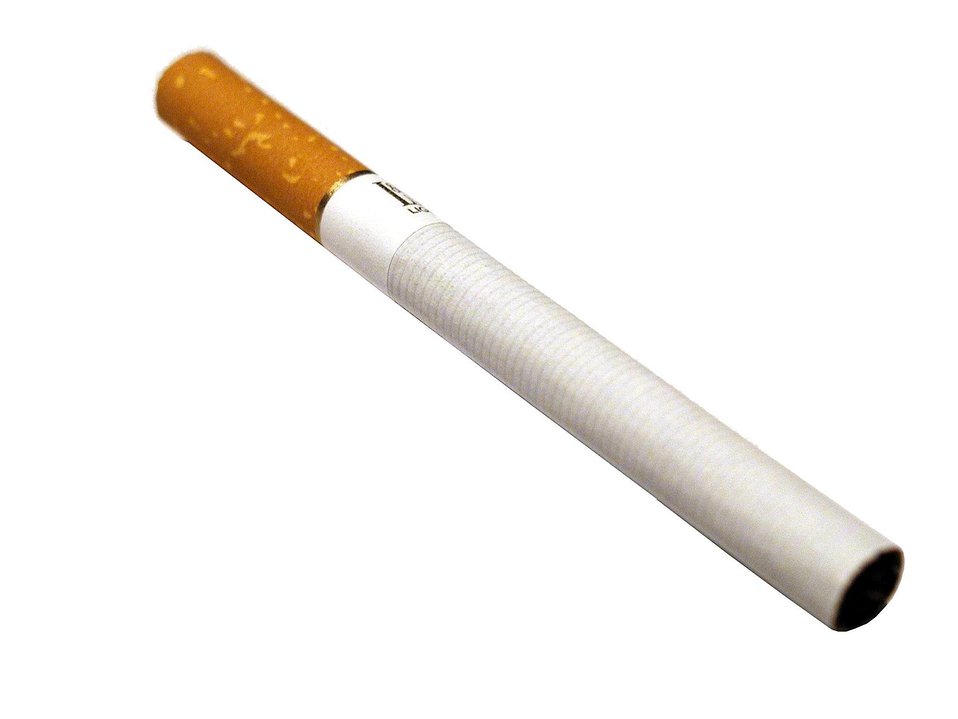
English:
Image title: Cigaretet white background stock photo Image from Public domain images website, http://www.public-domain-image.com/full-image/objects-public-domain-images-pictures/cigarettes-public-domain-images-pictures/cigarette-white-background-stock-photo.jpg.html